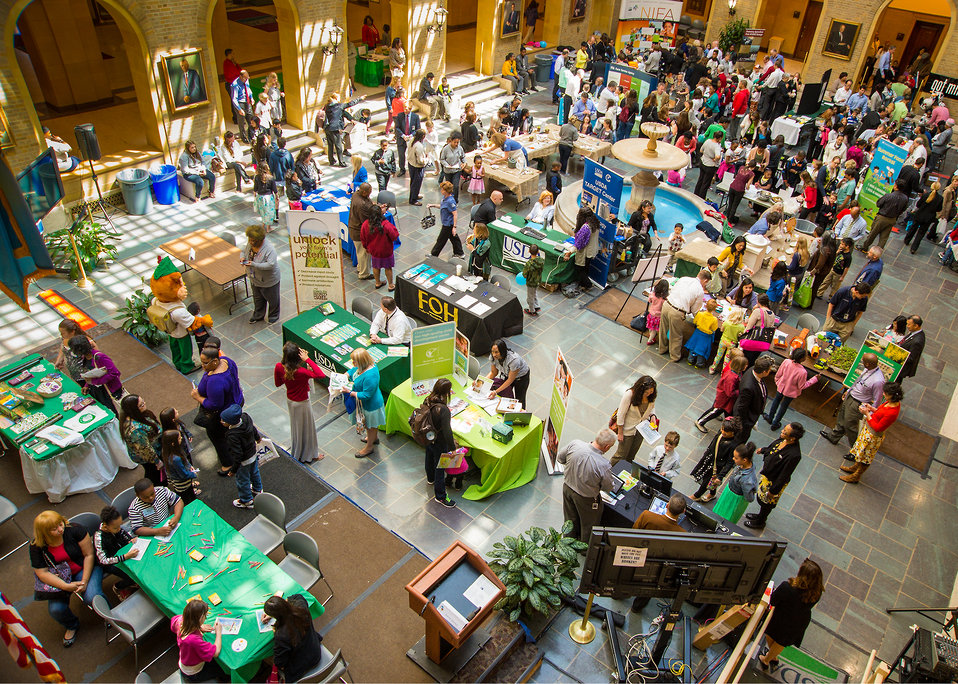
The U.S. Department of Agriculture (USDA) held its annual “Bring Your Daughters and Sons to Work on Thursday, Apr. 24, 2014 in Washington, D.C. The event offers employees the opportunity to bring their children to work to experience what they do in their profession and offer insight into other careers at the Department of Agriculture.